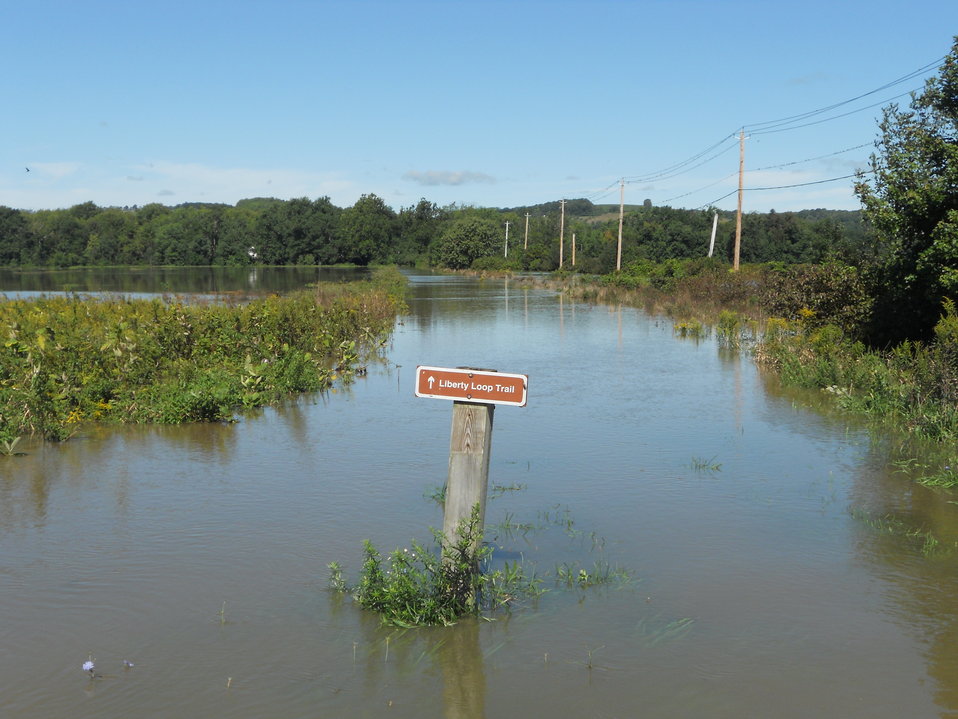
Flooding at WallKill River Refuge

Wallkill River National Wildlife Refuge, Sussex, N.J. Post-Irene flooded Liberty Loop impoundments and trail. Meagan Racey/USFWS